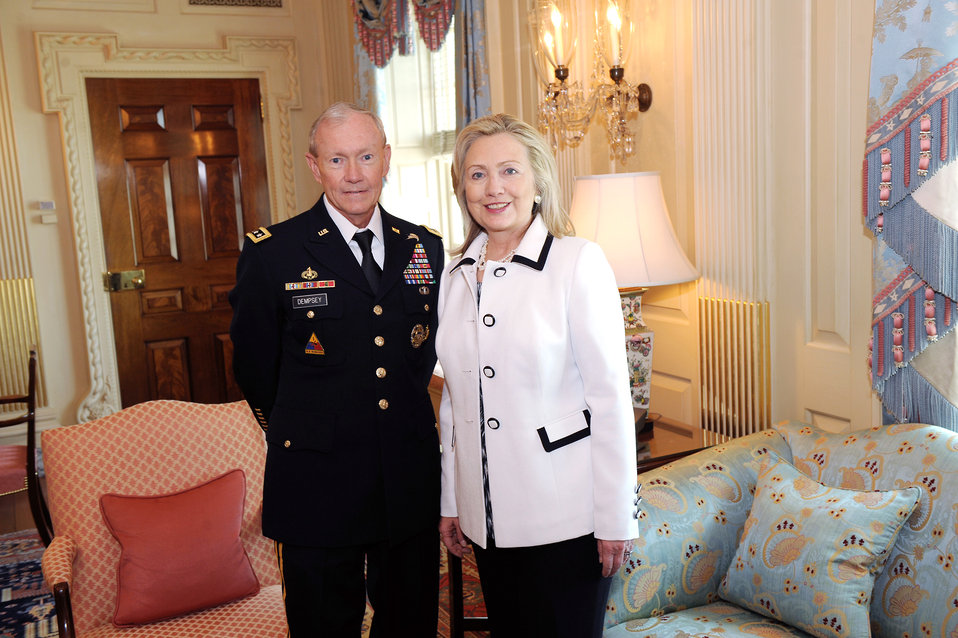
Secretary Clinton Meets With General Dempsey

U.S. Secretary of State Hillary Rodham Clinton meets with General Martin Dempsey, Incoming Chairman of Joint Chiefs of Staff, at the U.S. Department of State in Washington, D.C., on August 17, 2011.